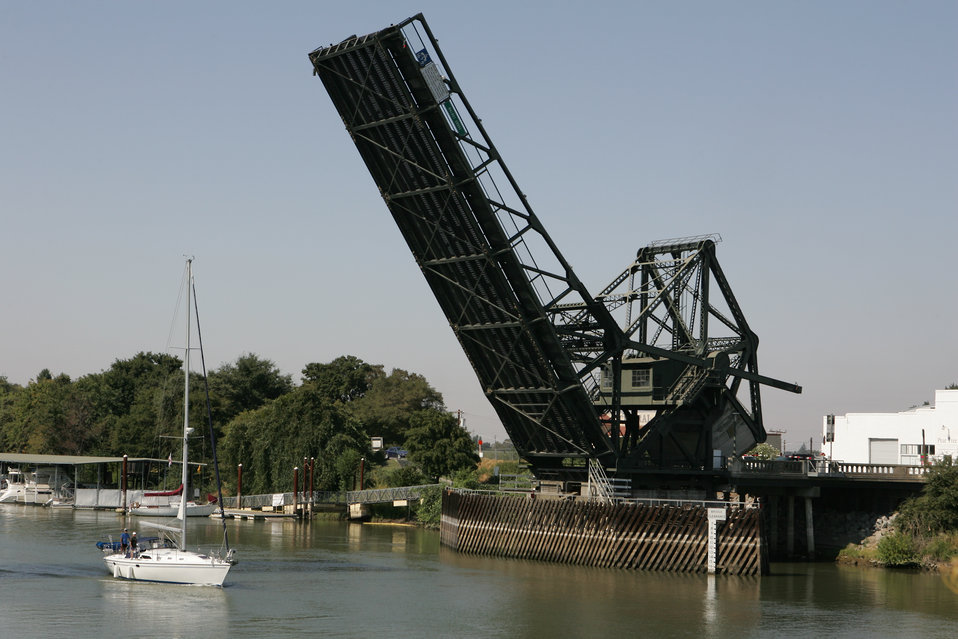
WALNUT GROVE,Calif.(Sept.7,2006)--A draw bridge on the Sacramento River in the delta town of Walnut Grove stops traffic for a passing sailboat.The U.S. Army Corps of Engineers, Sacramento and San Francisco Districts, has multiple studies and projects addressing the mission areas of Ecosystem Restoration, Flood Risk Management, Navigation, and Watershed Planning within the Delta region. The study boundaries and mission areas of these ongoing projects sometimes coincide, complicating planning and coordination efforts. In addition to the projects undertaken by the Corps, numerous other Federal, State, and local efforts are underway. The key component to the success of each of these initiatives will involve sharing of information, cooperation, collaboration, and partnership.